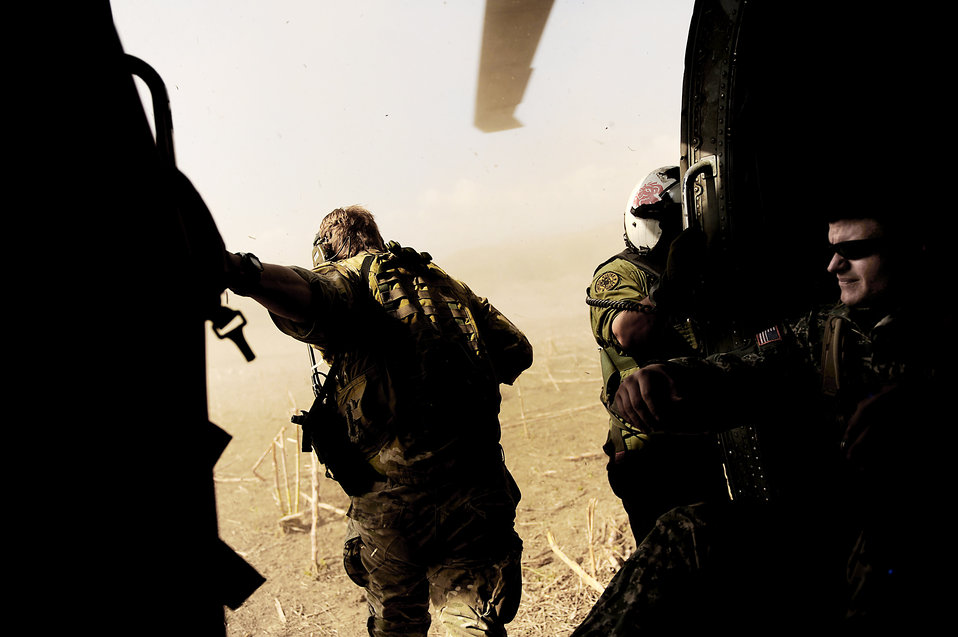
Joint team conducts drop zone survey

U.S. Air Force combat controllers and U.S. Army pathfinders conduct a drop zone survey outside Port-au-Prince, Haiti, Jan. 24, 2010, during Operation Unified Response in a U.S. Navy HH-60 Seahawk helicopter.